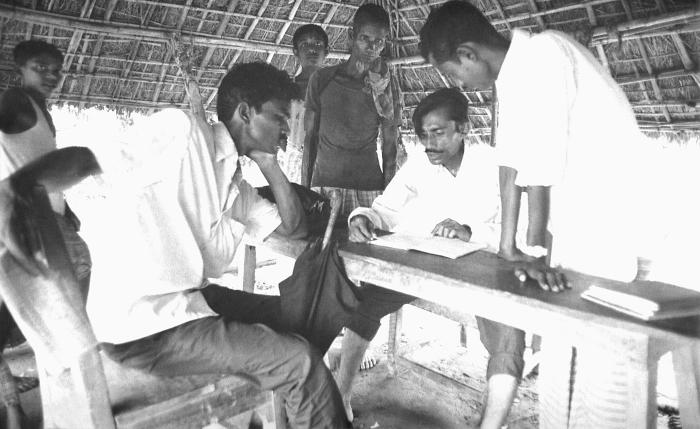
These local Bangladesh men were analyzing collected data under a field hut location. The keeping of detailed records was extremely important, and is one of the hallmarks of properly practiced epidemiologic science. Smallpox cases that were uncovered had to be followed to a successful outcome, as well as anyone associate through close contact with any confirmed smallpox case. Local residents who became resident vaccinators, played a profound role in achieving a successful outcome to the eradication program. As locals, they were viewed as familiar, and trusted, and spoke the local dialect, thereby, facilitating enhanced communication with fellow inhabitants.